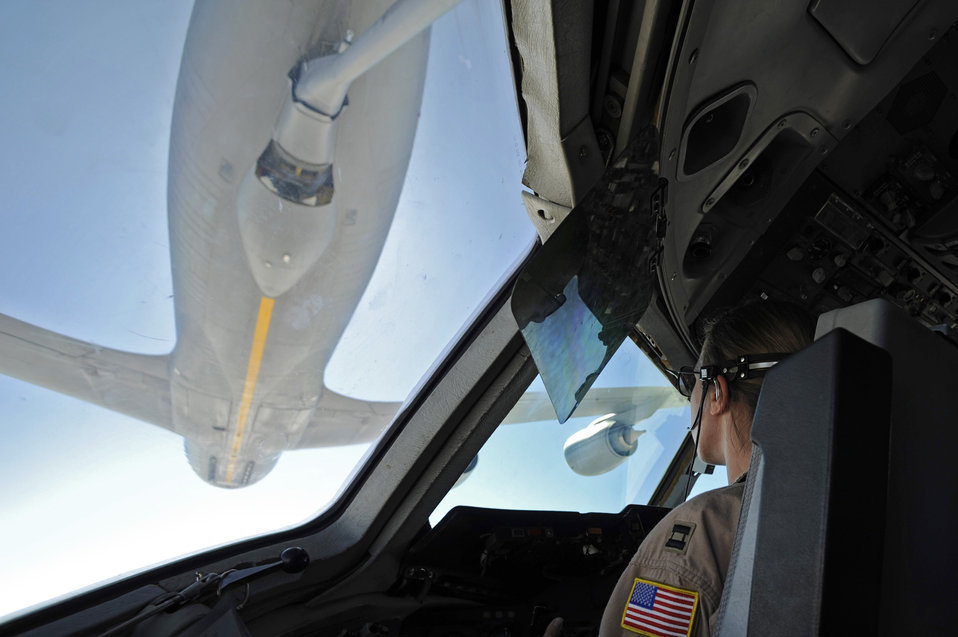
AMC commander visits Airmen in Southwest Asia, highlights mobility's role

Capt. Kristin Sajevic pilots a KC-10 Extender while receiving fuel from an KC-135 Stratotanker June 14 over Afghanistan. Captain Sajevic is assigned to the 908th Expeditionary Air Refueling Squadron.